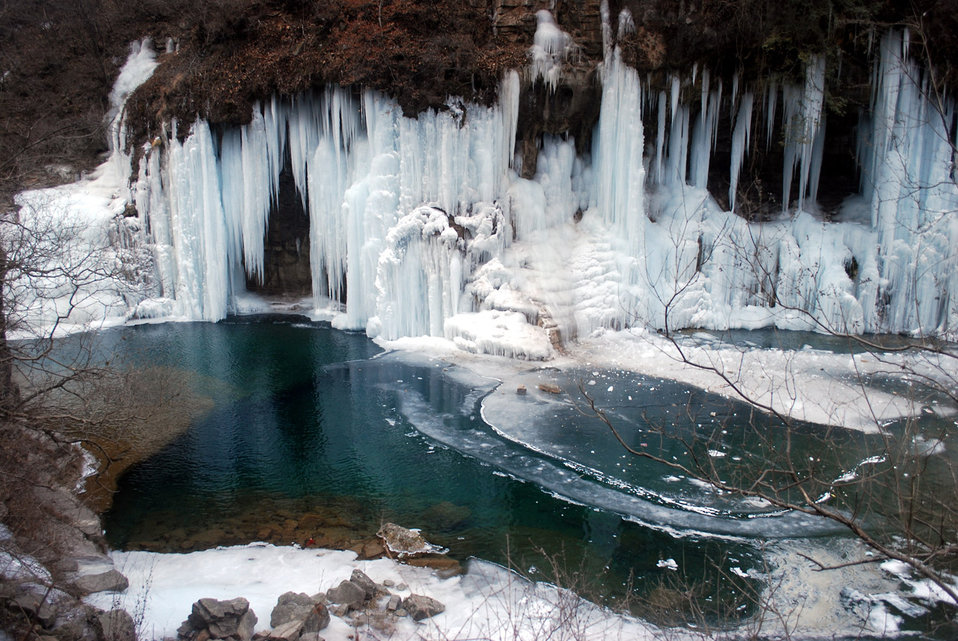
Mountain pond and ice

Mountain springs form ice waterfall.